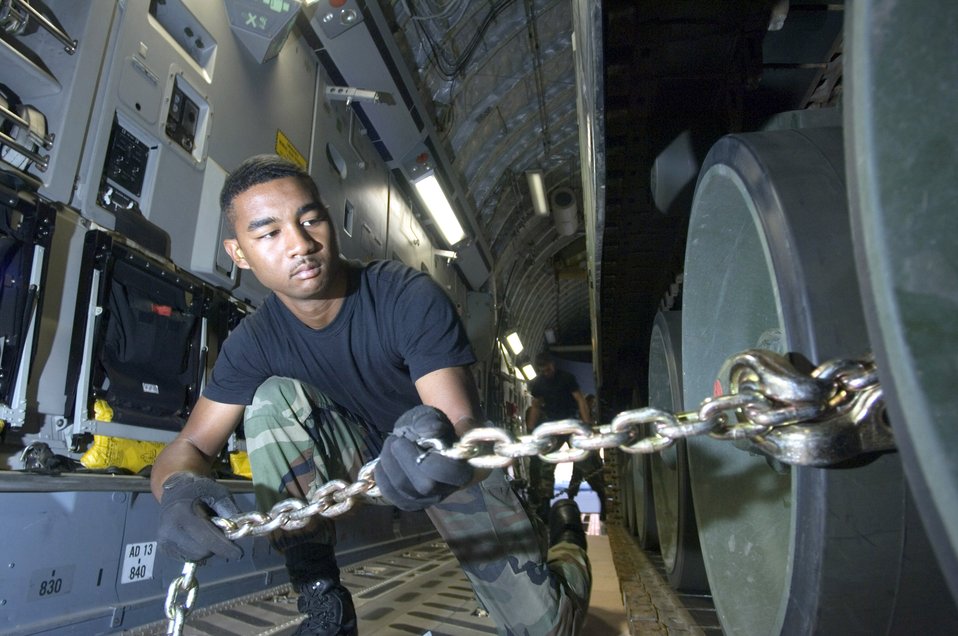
Howitzer takes flight

Airman Jason Estell prepares one of the 29 chains used to secure a 60-ton Netherlander Howitzer 2000 on a C-17 Globemaster III at Ramstein Air Base, Germany, Sept. 6. Airman Estell is an air transportation specialist with Ramstein's 723rd Air Mobility Squadron.